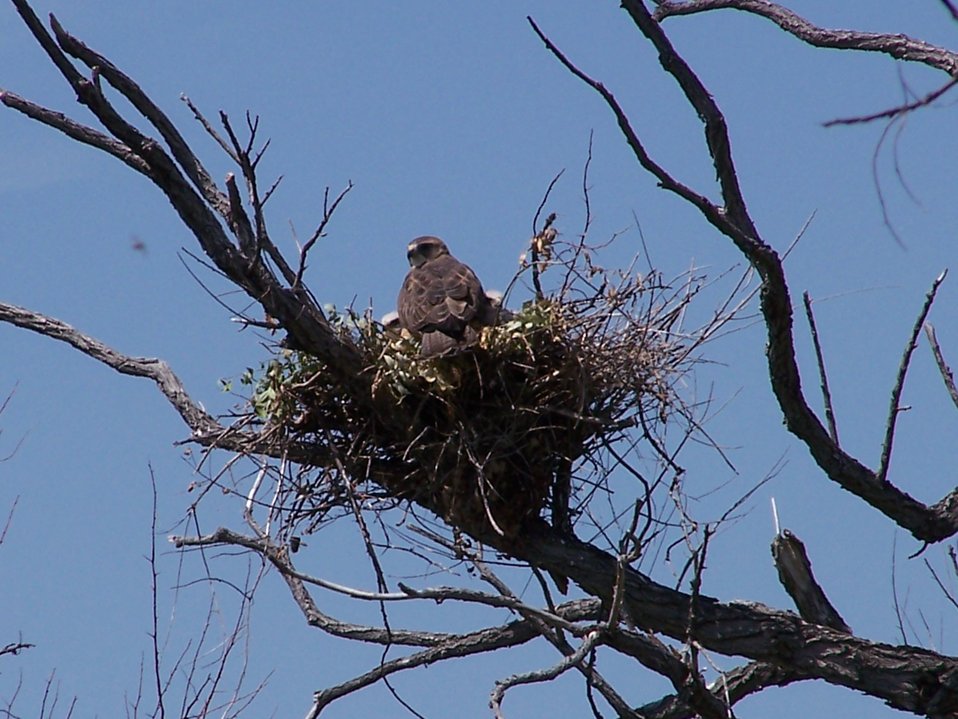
Swainson's hawk in Russian olive tree on Bowdoin NWR